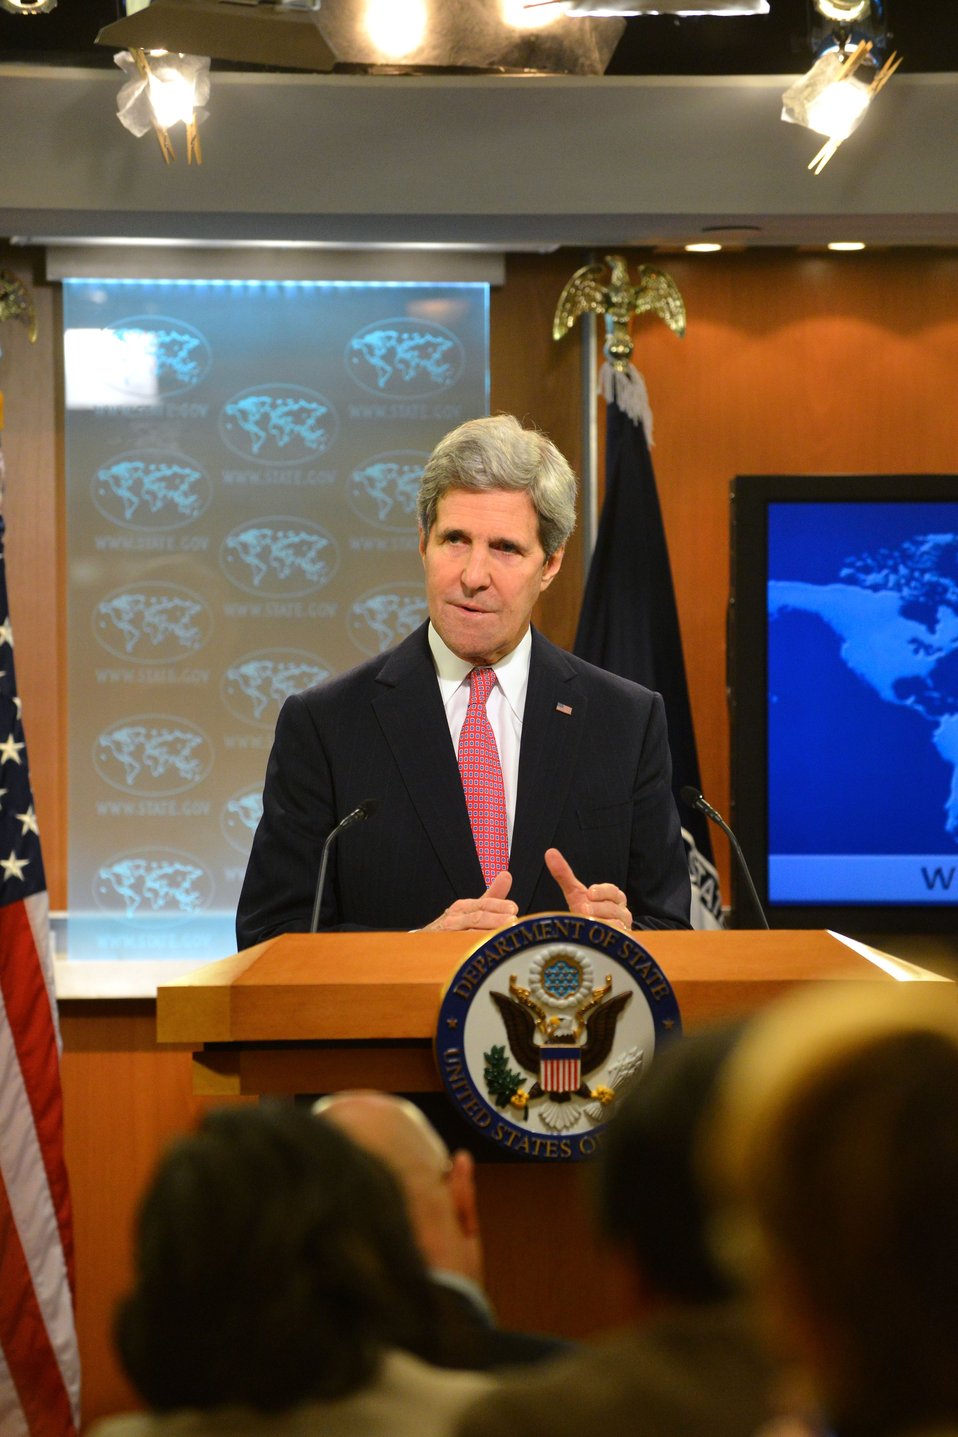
Secretary Kerry Releases the Annual Country Report on Human Rights

U.S. Secretary of State John Kerry releases the Annual Country Report on Human Rights at the U.S. Department of State in Washington, D.C., on February 27, 2014.